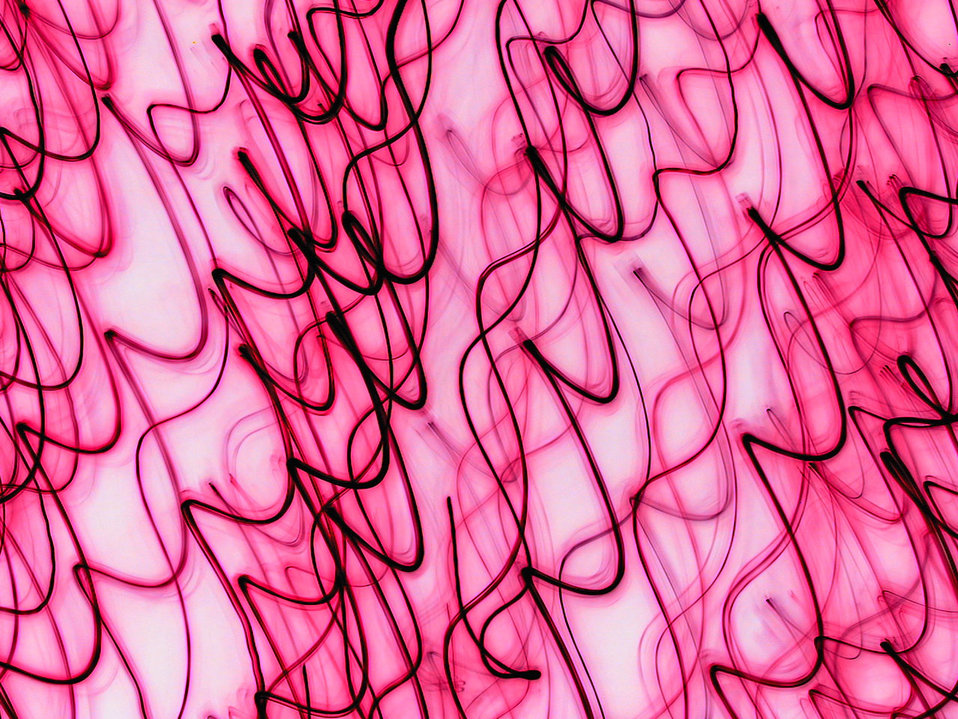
Abstract pink

An unusual background photo of black swirls on pink and magenta.